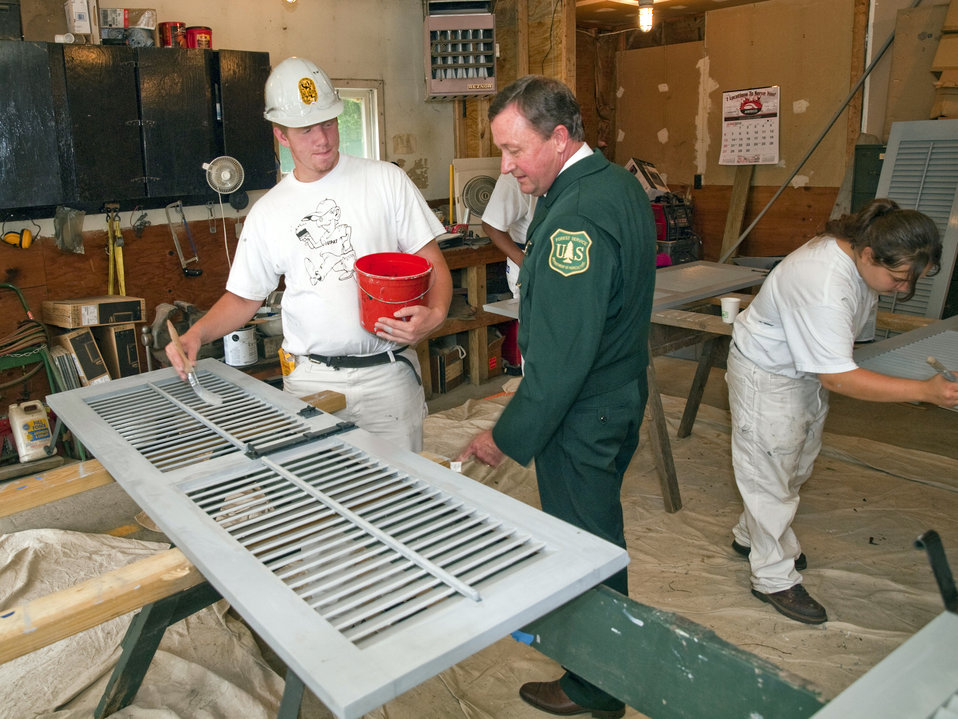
U. S. Forest Service Economic Recovery Executive David Dillard, looks over the progress of Job Corps students helping to restore Grey Towers National Historic Site. $2,440,000 in Recovery Act funds were allocated to repair and refurbish the house and grounds of the ancestral home of the first Chief of the Forest Service and two-term Pennsylvania governor Gifford Pinchot on Tuesday August 3, 2010 in Milford, PA. This project at the 123-year-old site repairs various deficiencies with the buildings and grounds, restores areas of the historic landscape, improves visitor safety and site security, provides a more sustainable facility, and enhances the visitor experience. It helps to ensure the historic site is maintained for years to come.